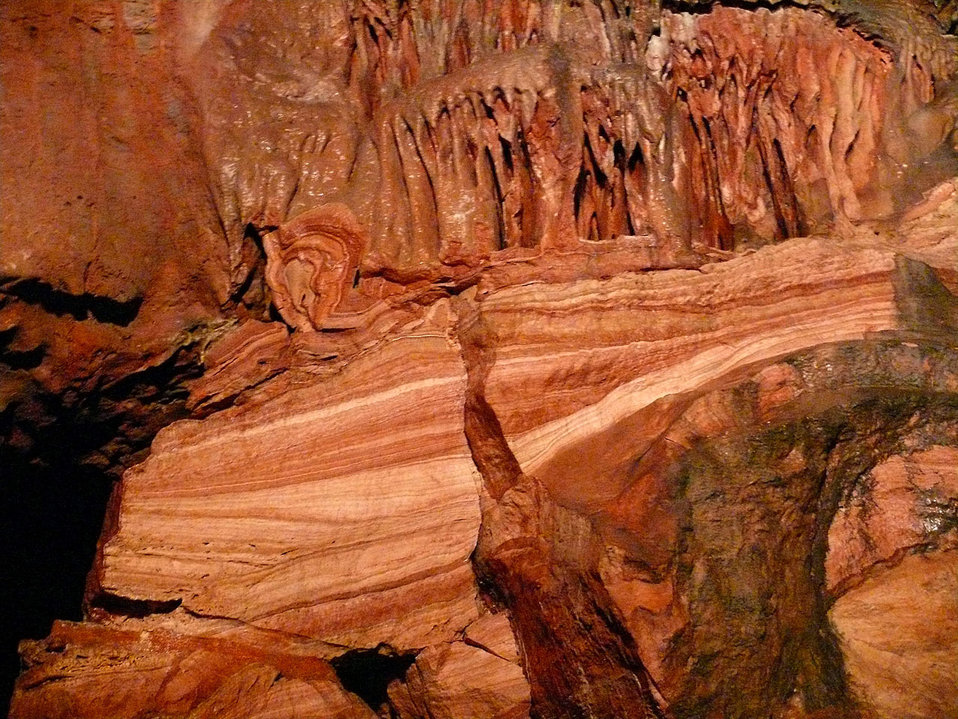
Kents cavern

Cave in torquay.